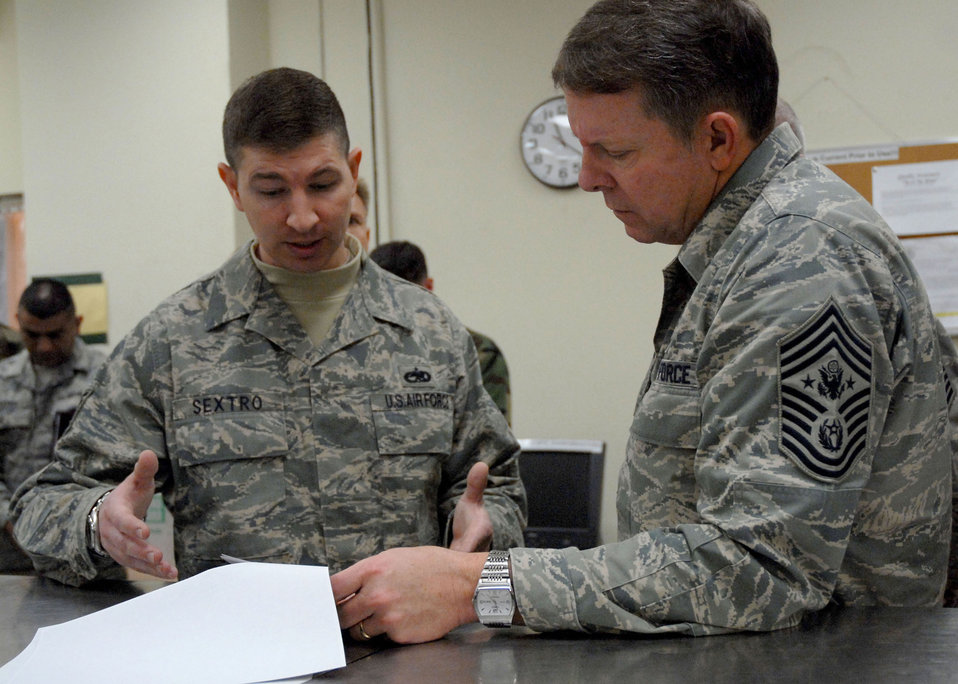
Chief master sergeant of the Air Force visits Kunsan Airmen

Tech. Sgt. Michael Sextro briefs Chief Master Sgt. of the Air Force Rodney J. McKinley about intake rippling on F-16 Fighting Falcons during the chief's March 24 visit to Kunsan Air Base, South Korea. Sergeant Sexton is assigned to the 8th Aircraft Maintenance Squadron.